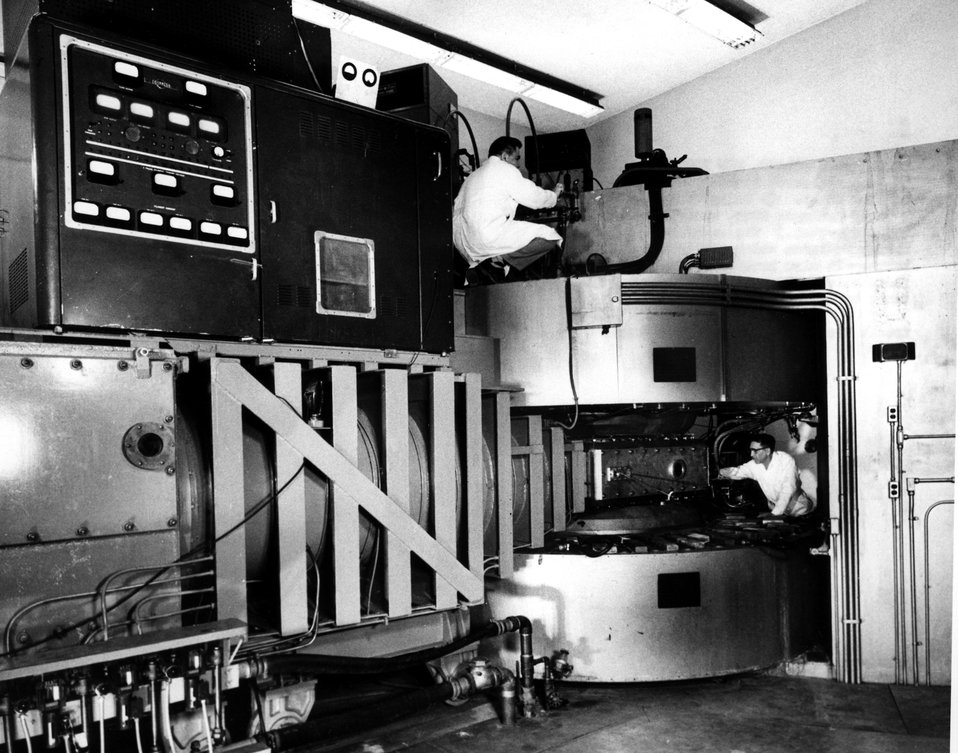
The Brookhaven 60-inch cyclotron accelerates deuterons to 20 million volts.